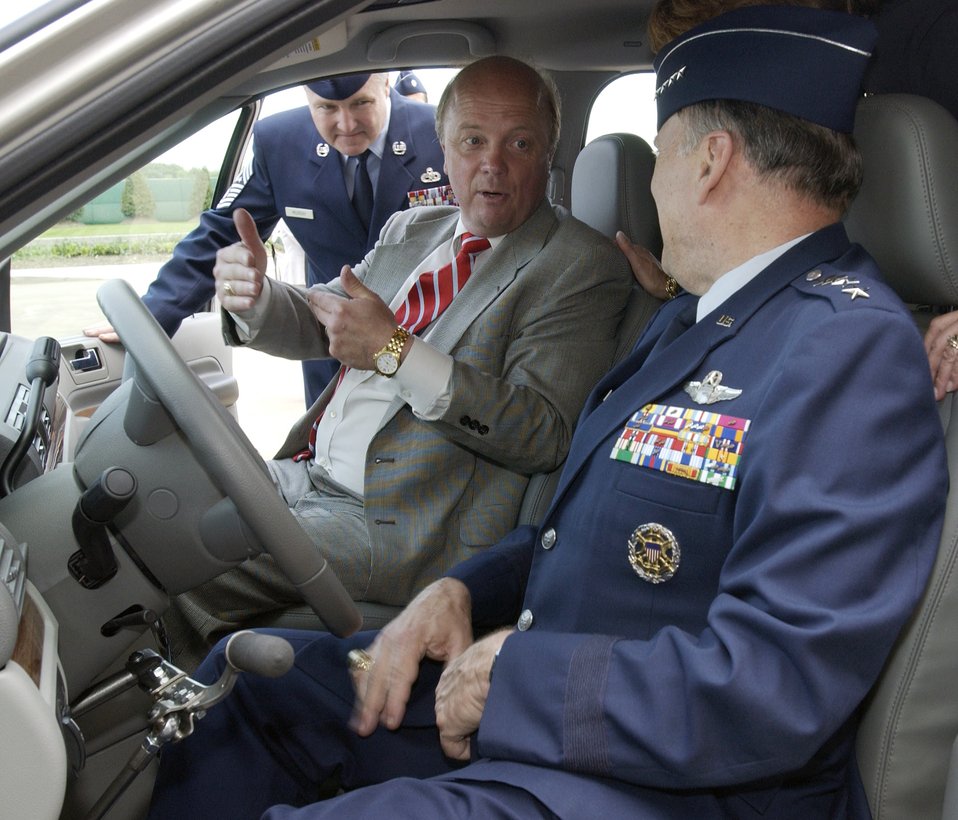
Donation provides mobility, honors Jumper

WASHINGTON -- Chief Master Sgt. of the Air Force Gerald R. Murray looks on as Bobby Baker explains to Air Force Chief of Staff Gen. John P. Jumper the adaptive features of a van. The van is one of two donated in General Jumper's and his wife, Ellen's, names to Walter Reed Army Medical Center in Arlington, Va., by the Ford Motor company. Walter Reed staff will use one van for moving wounded servicemembers, while the other will be used by the various therapy programs to teach wheelchair bound servicemembers or amputees how to drive with their injuries. Mr. Baker is the mobility manager for a local dealer.